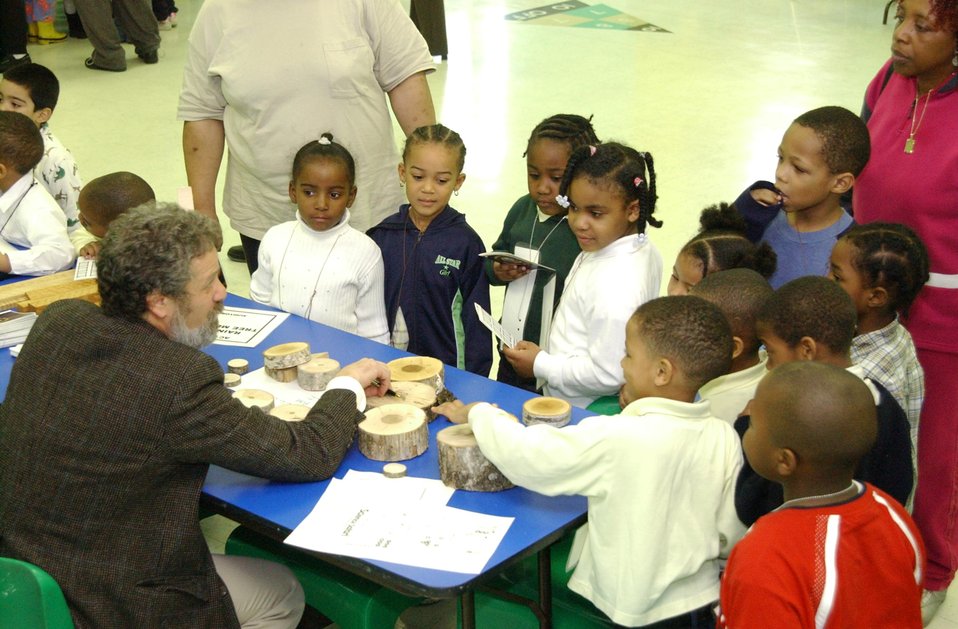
DR. PETER FALETRA OF DOE EXPLAINS RAIN FOREST TREE MEASURING TO ELEMENTARY SCHOOL STUDENTS IN WASHINGTON, DC.

DR. FALETRA, DOE'S SENIOR TECHNICAL ADVISOR FOR SCIENCE EDUCATION PARTICIPATED IN THE SCIENCE SAFARI WHICH TOOK PLACE AT THE CAPITAL CHILDREN'S MUSEUM ON MARCH 20, 2003. SEVERAL ELEMENTARY SCHOOLS FROM WASHINGTON D.C. ATTENDED AS PART OF THE EXCELLENCE IN SCIENCE, TECHNOLOGY AND MATHEMATICS EDUCATION WEEK.